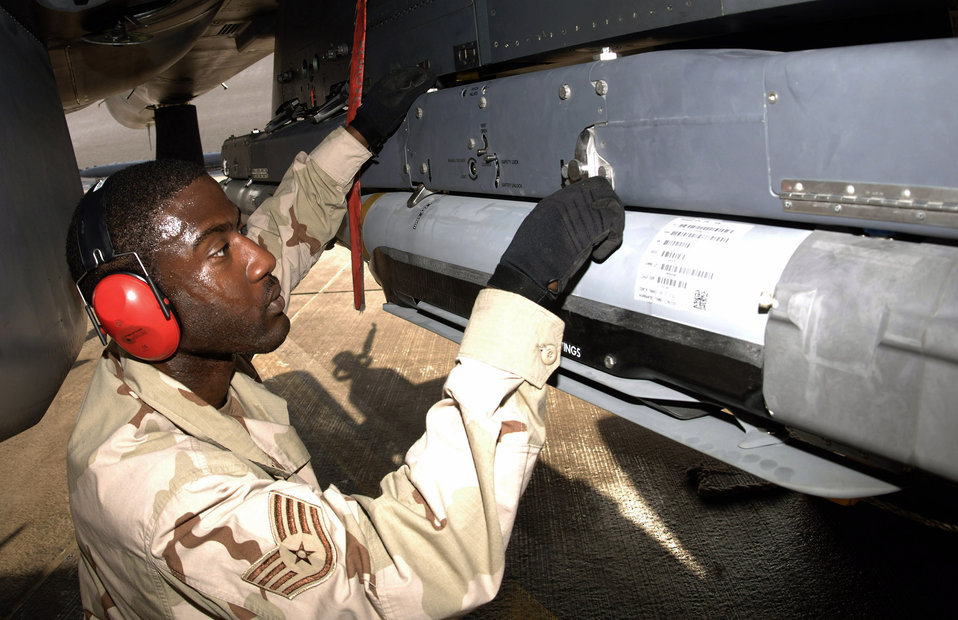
Feb. 20 airpower summary: F-15s destroy enemy targets

Staff Sgt. Kevin Harvey of the 379th Expeditionary Aircraft Maintenance Squadron secures GBU-39/B small diameter bombs to an F-15E Strike Eagle. The bombs' smaller warheads allow commanders to destroy targets close to friendly troops, civilians, structures and personal property.